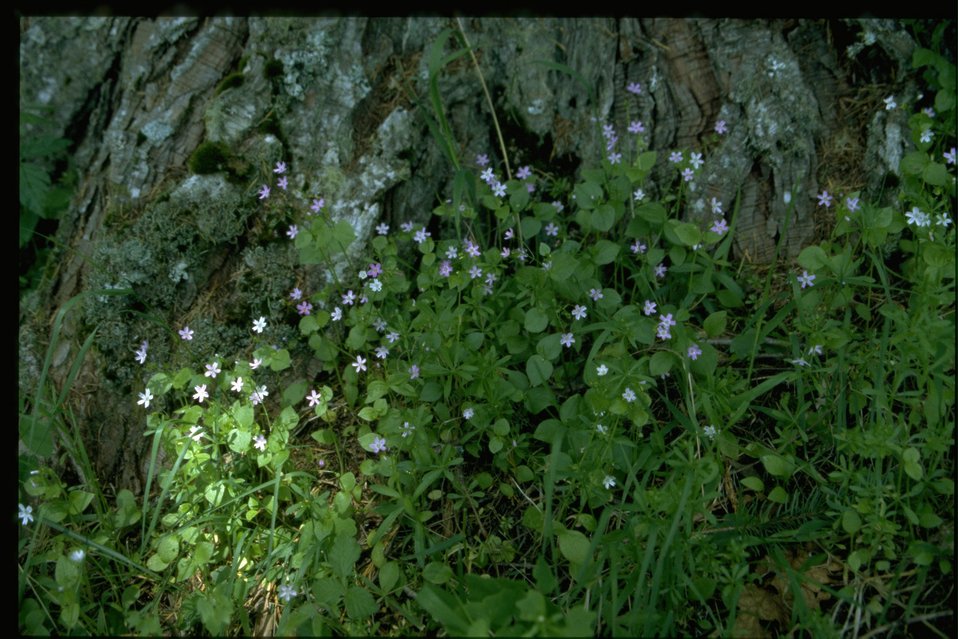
Farshot of Claytonia sibirica.